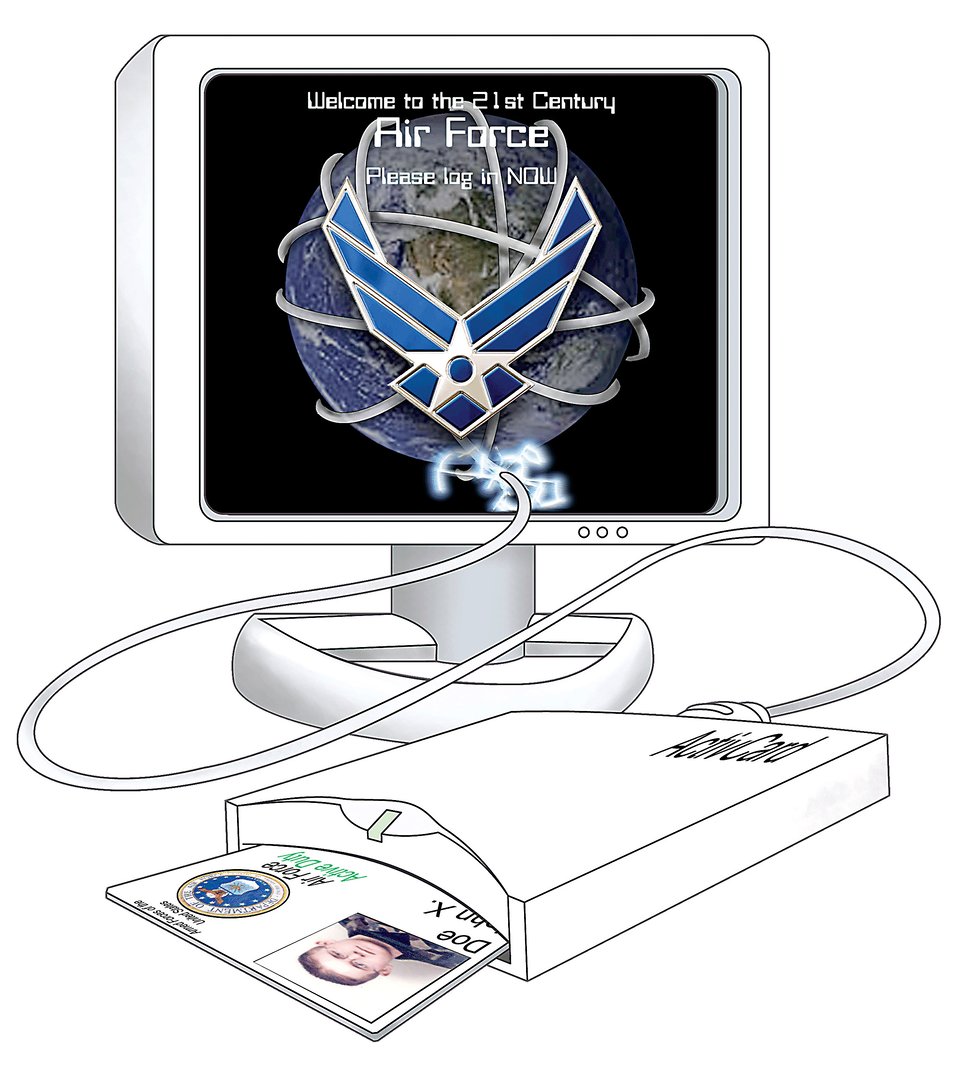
Software updates improve productivity, network security

The Integrated Network Operations and Security Center pushed an upgrade to the Standard Desktop Configuration throughout Air Combat Command Nov. 26. The upgrade is providing Air Force computer systems better security and will keep computer systems compliant with Air Force regulations regarding the SDC.